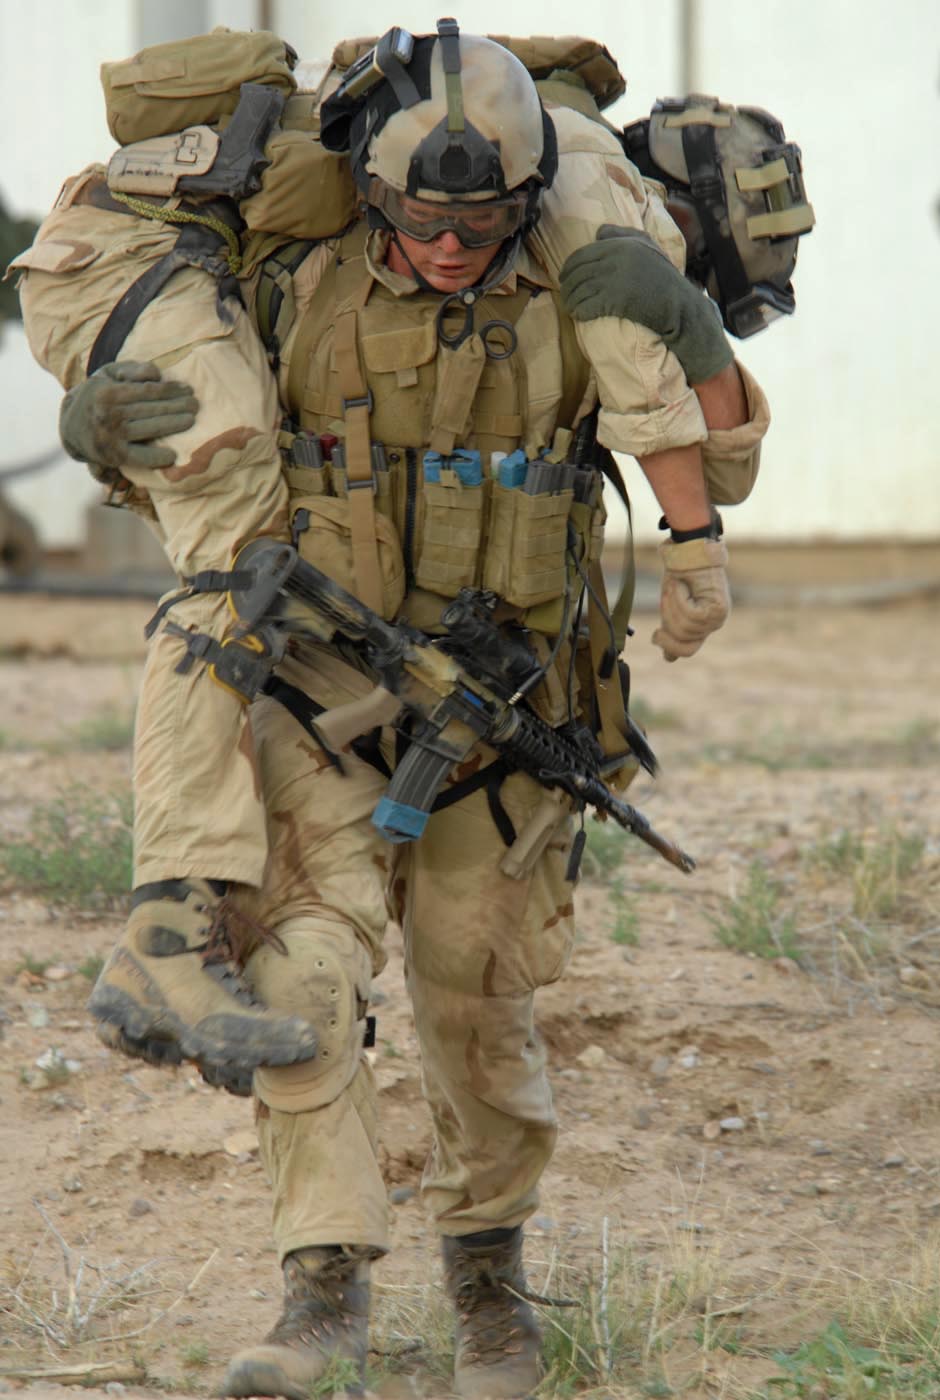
'Hang on, we're almost there'

Senior Airman Dwight Funk, a pararescueman from the 58th Rescue Squadron at Nellis Air Force Base, Nev., transports a